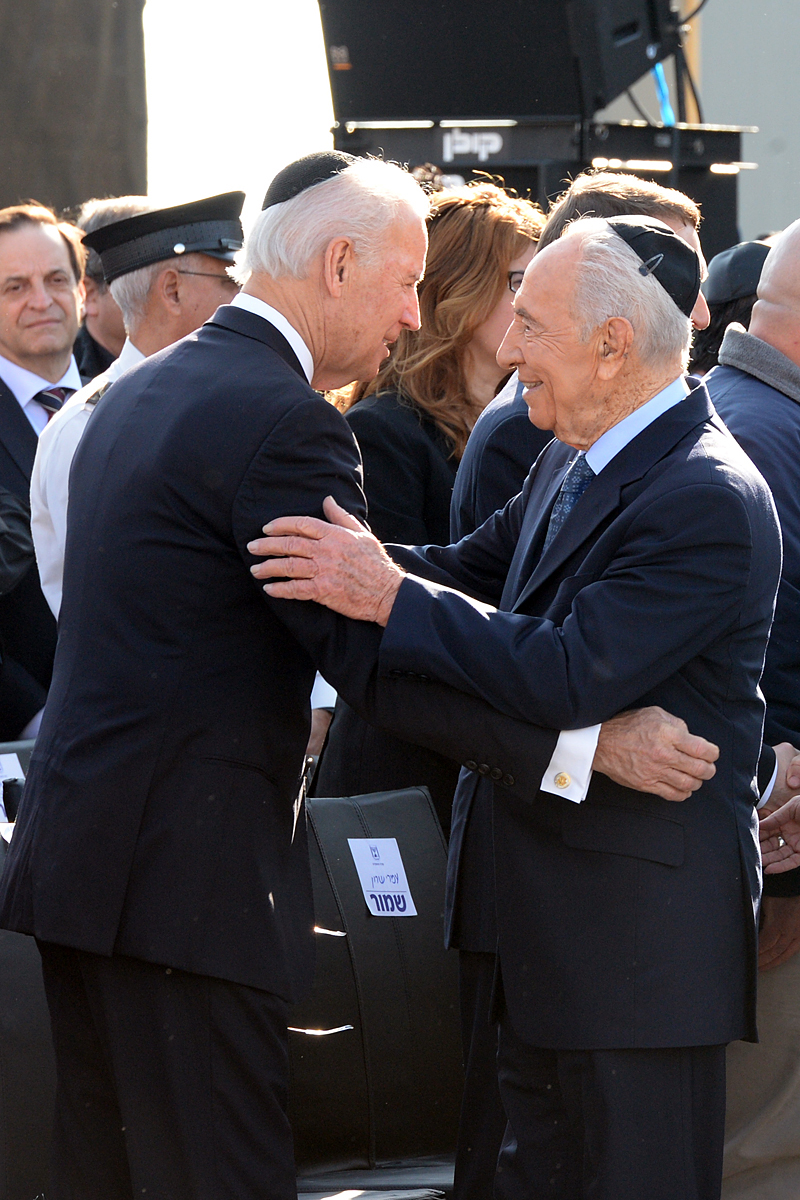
Vice President Biden Embraces Israeli President Peres

Vice President Joe Biden is greeted by Israeli President Shimon Peres at the State Funeral of Former Israeli Prime Minister Ariel Sharon in Jerusalem on January 13, 2013.